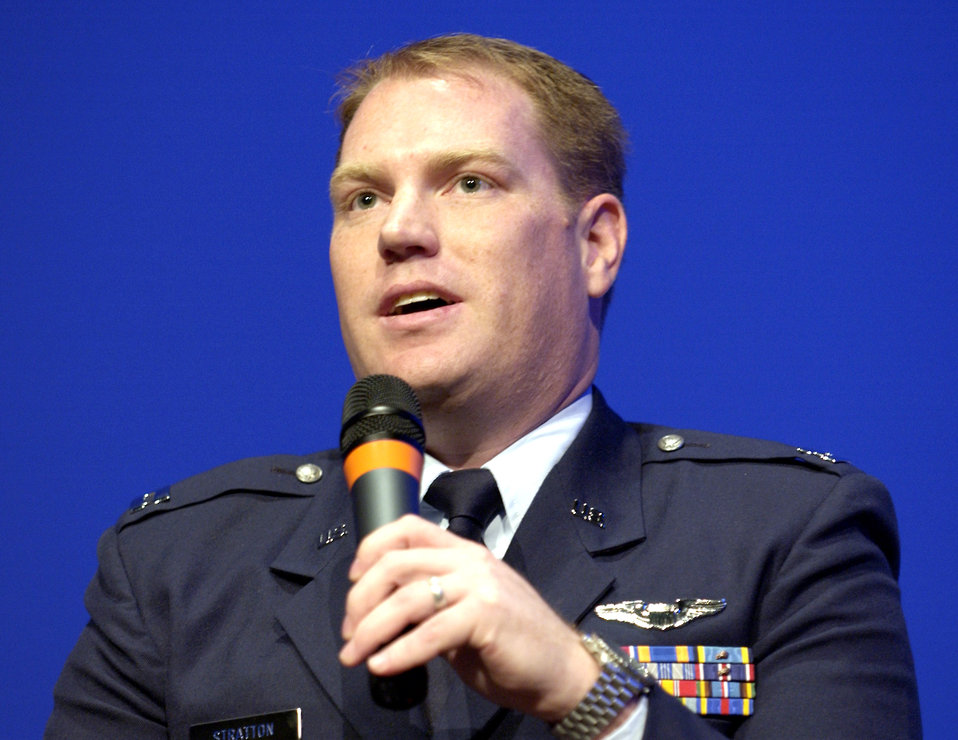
Fighter pilot film about teamwork, thrill of flight

CHANTILLY, Va. -- Capt. John Stratton discusses his role in the new IMAX film